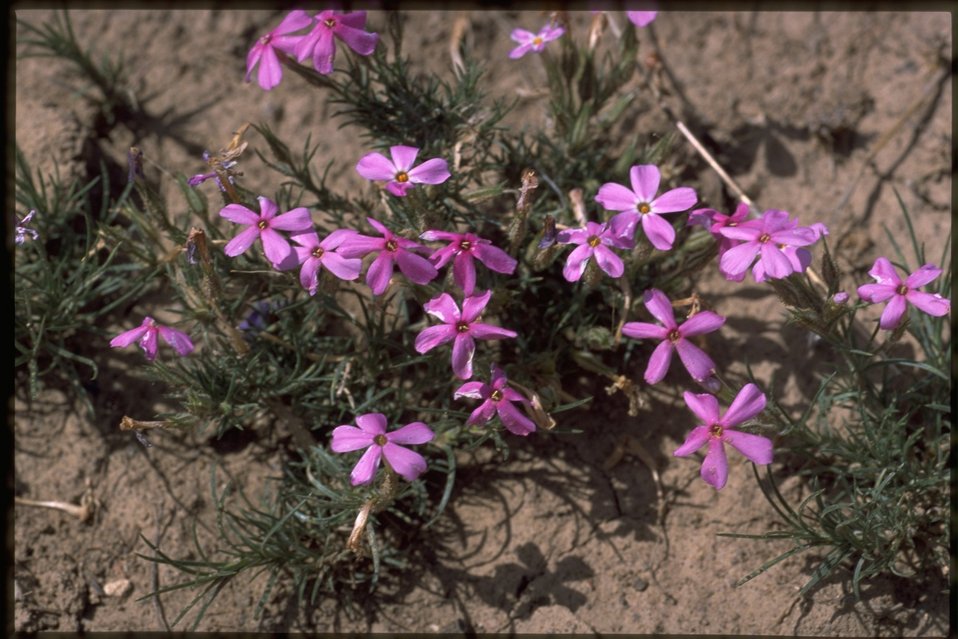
Medium shot of Phlox.